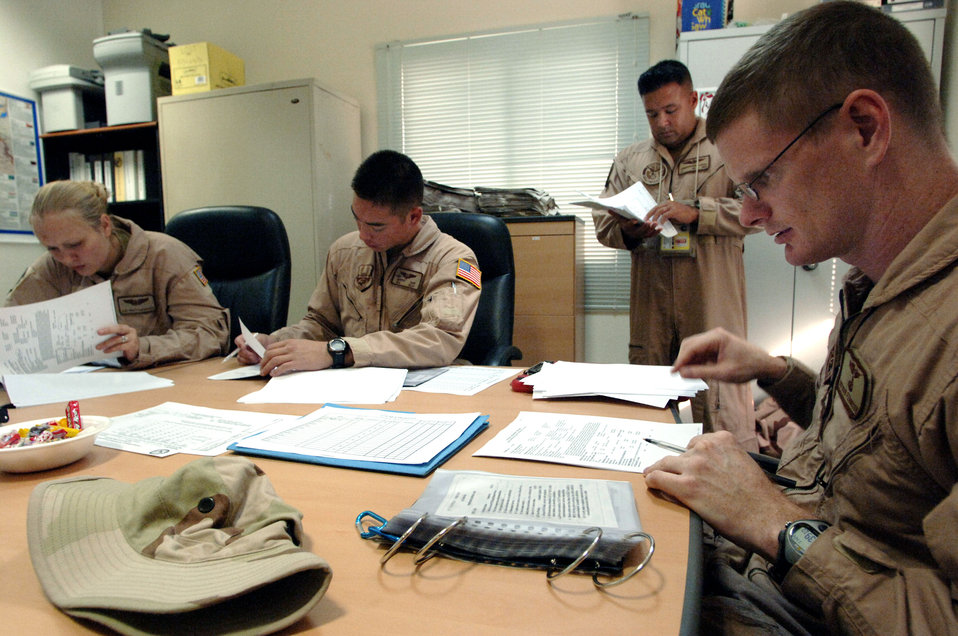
Aeromedical evacuation mission

Prior to an aeromedical evacuation mission over Southwest Asia, Nov. 22, flight nurses Nathan Ferguson, right, and 1st Lt. Christopher Cesa, standing, review patient records with flight medics, Senior Airman Jeremy Ray and Staff Sgt. Kristy Vandergriff. The Airmen are with the 379th Expeditionary Aeromedical Evacuation Squadron.